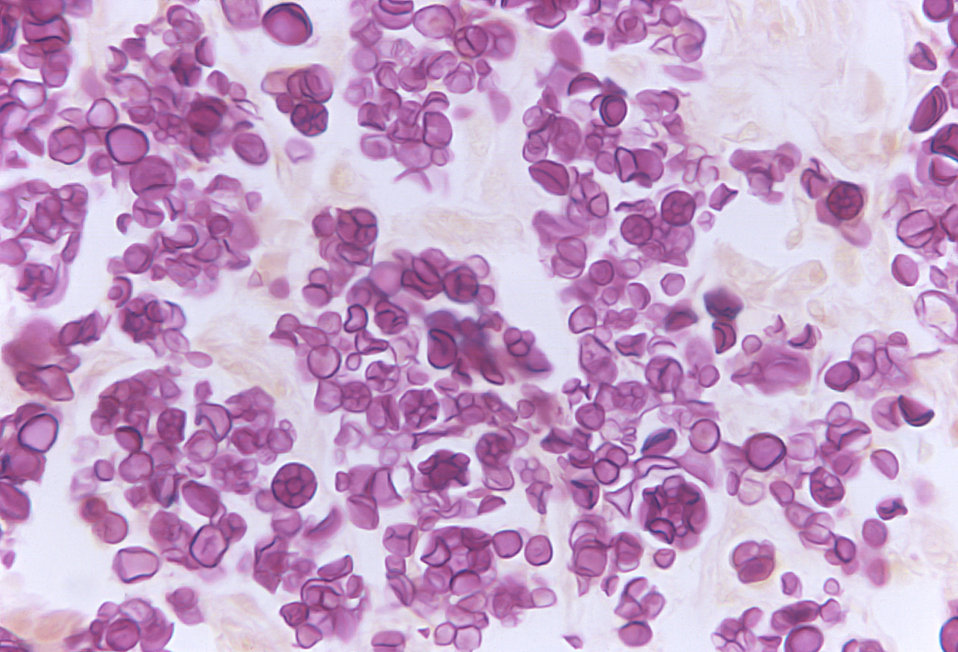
Under a magnification of 500X, this Gridley-stained photomicrograph revealed the presence of numbers of algal organisms, Prototheca wickerhamii, which were found within a specimen of deer tissue. Though categorized taxonomically as an alga, it derives its sustenance as a saprophyte, consuming dead and decaying organic matter.